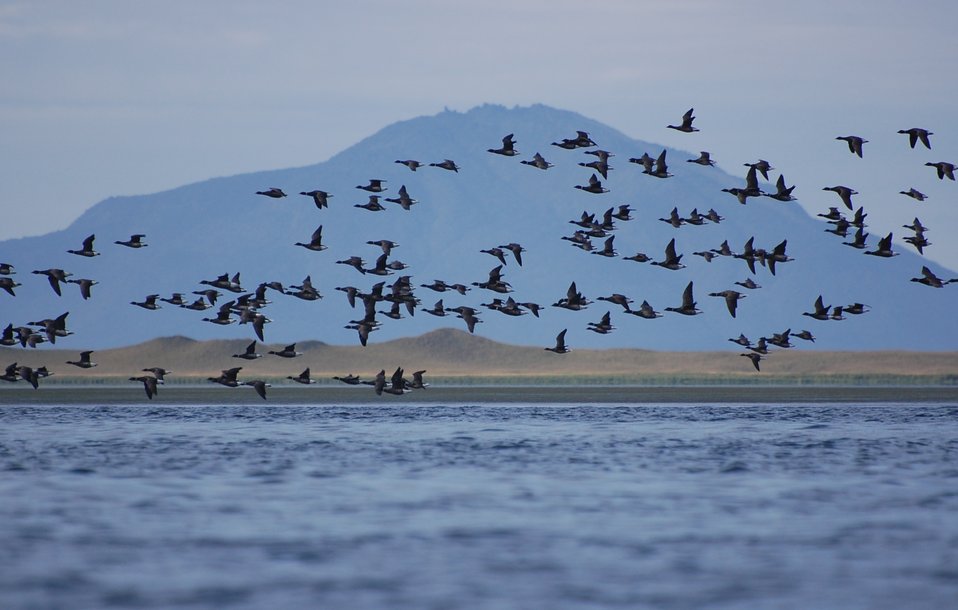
Brant and Amak Island

Brant at Izembek Lagoon, Izembek National Wildlife Refuge